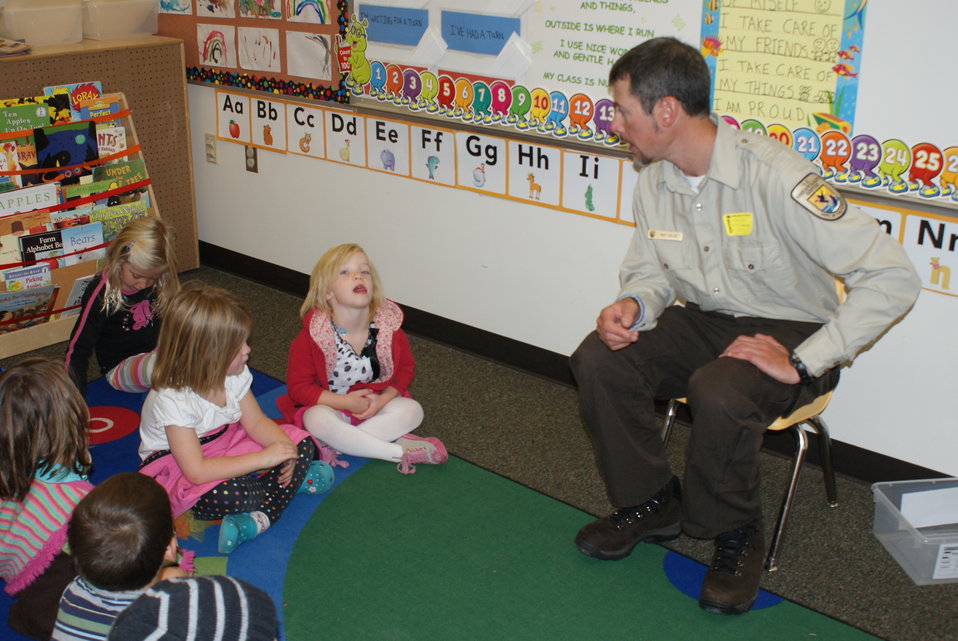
Scientists in the Community Program

U.S. Fish and Wildlife Service Mountain-Prairie Region Deputy ARD for External Affairs, Matt Kales, introduces early childhood education students at William Roberts Elementary School in Denver to some of Colorado's native and historic wildlife species.